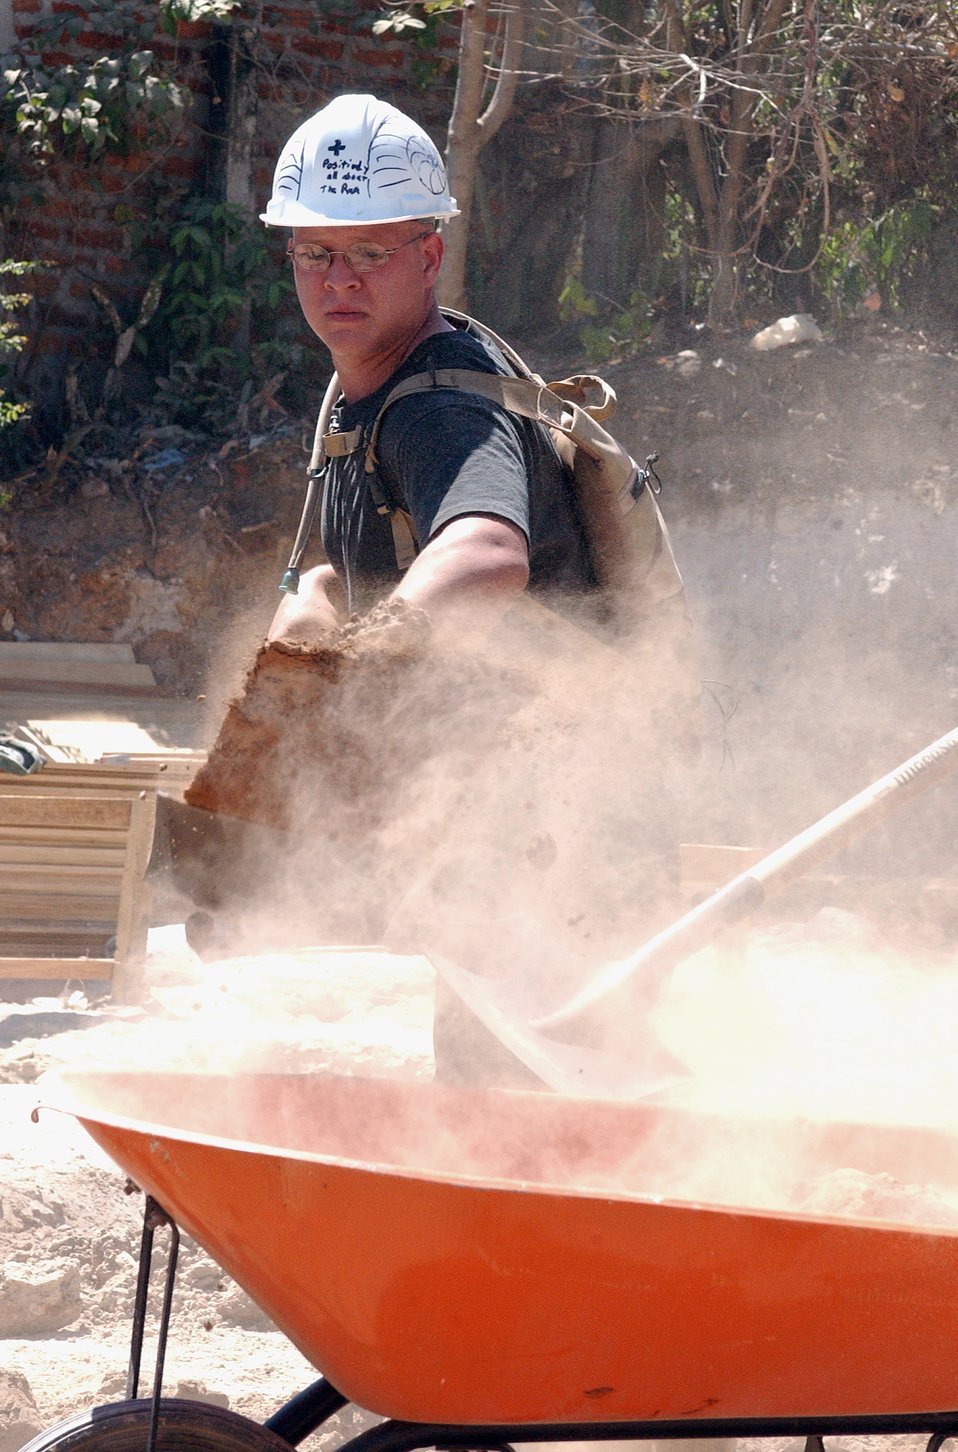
Airmen examining New Horizons

SANTA CLARA, El Salvador -- Airman 1st Class John Merchant removes dirt from a clinic work site here. Reserve and active-duty Airmen are supporting New Horizons 2005, a readiness training exercise providing humanitarian assistance to people in El Salvador. Airman Merchant is assigned to the 99th Civil Engineer Squadron at Nellis Air Force Base, Nev.